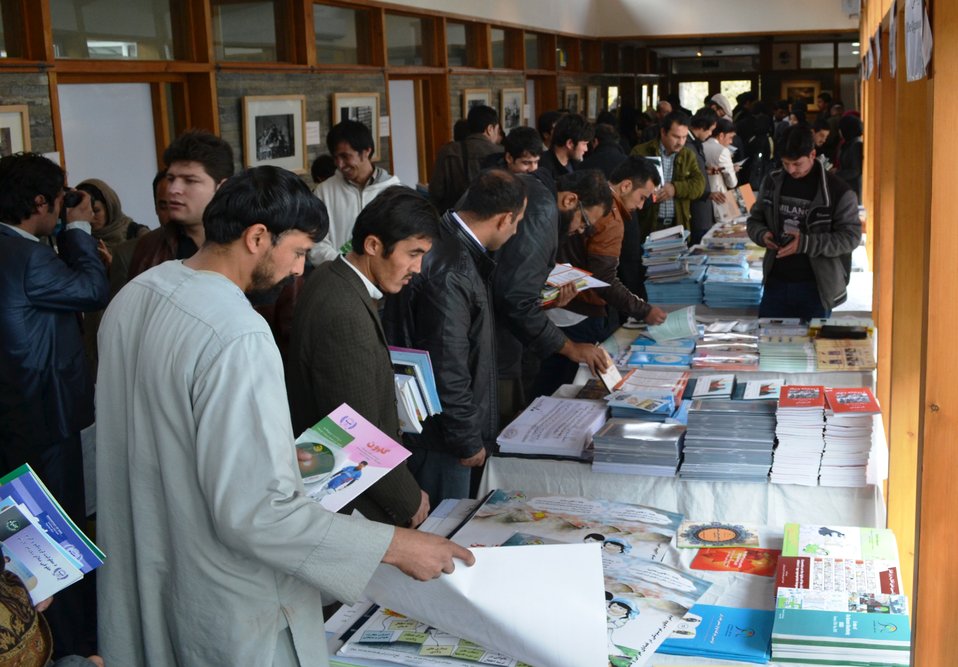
Human Rights Day at the Afghan Center, Kabul University